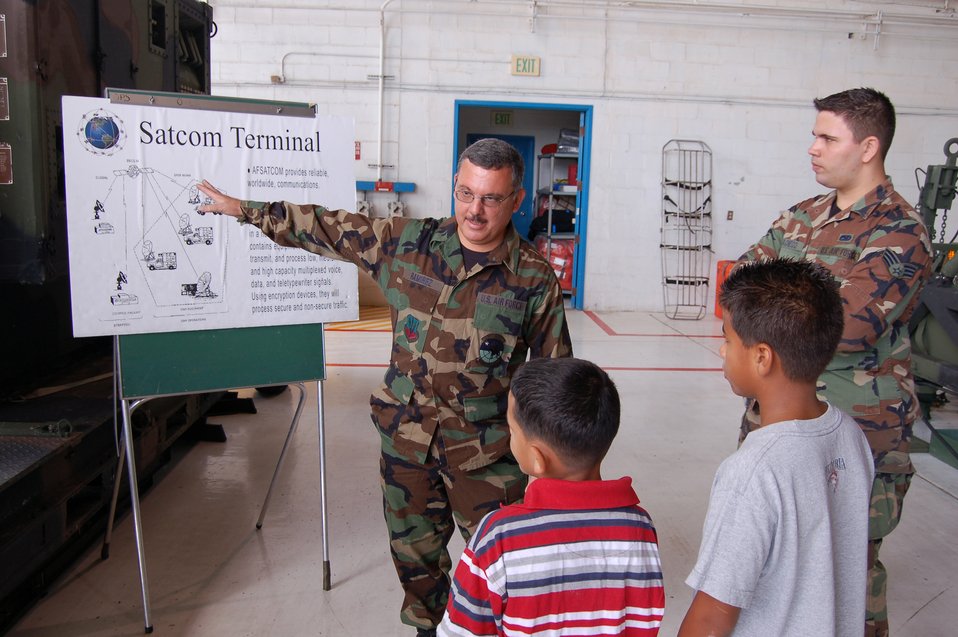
Visit

Master Sgt. George Ramirez explains the equipment and mission of the 141st Air Control Squadron to local school children March 22 at Coast Guard Air Station Borinquen, Puerto Rico. Sergeant Ramirez is an electronic mechanic and one of approximately 100 Airmen of the Air National Guard's 141st ACS. Coast Guard Air Station Borinquen is located at what used to be Ramey Air Force Base, which closed in 1973.